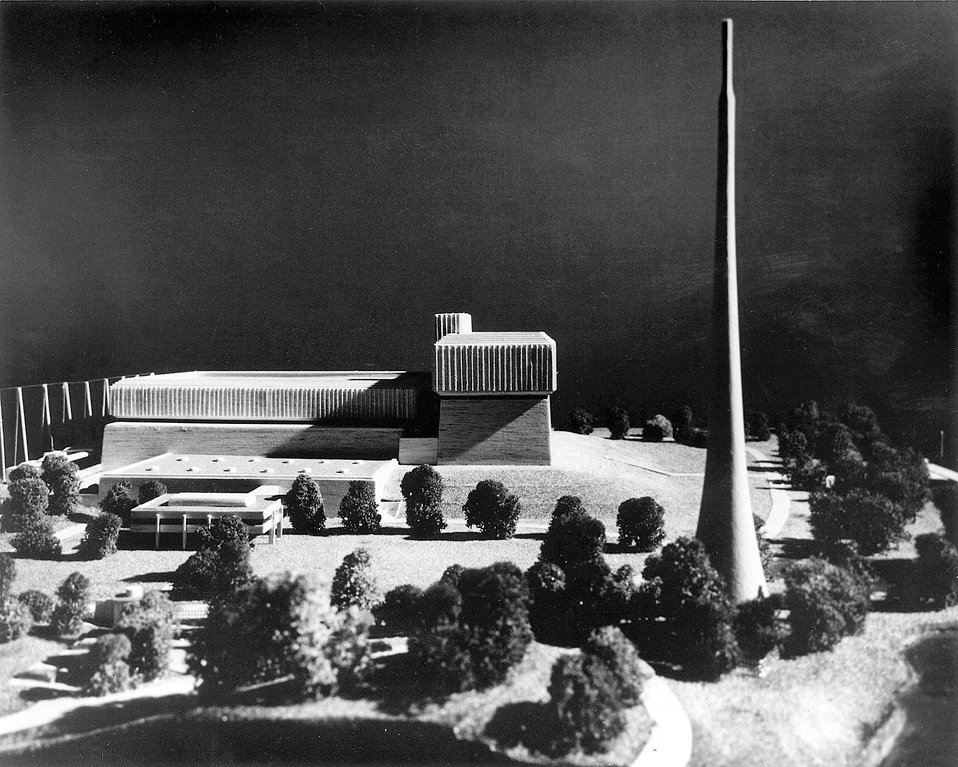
The site of TVA's Browns Ferry Nuclear Power Plant is on Wheeler Lake 10 miles northwest of Decatur, Alabama, and 10 miles southwest of Athens. Circa 1967.